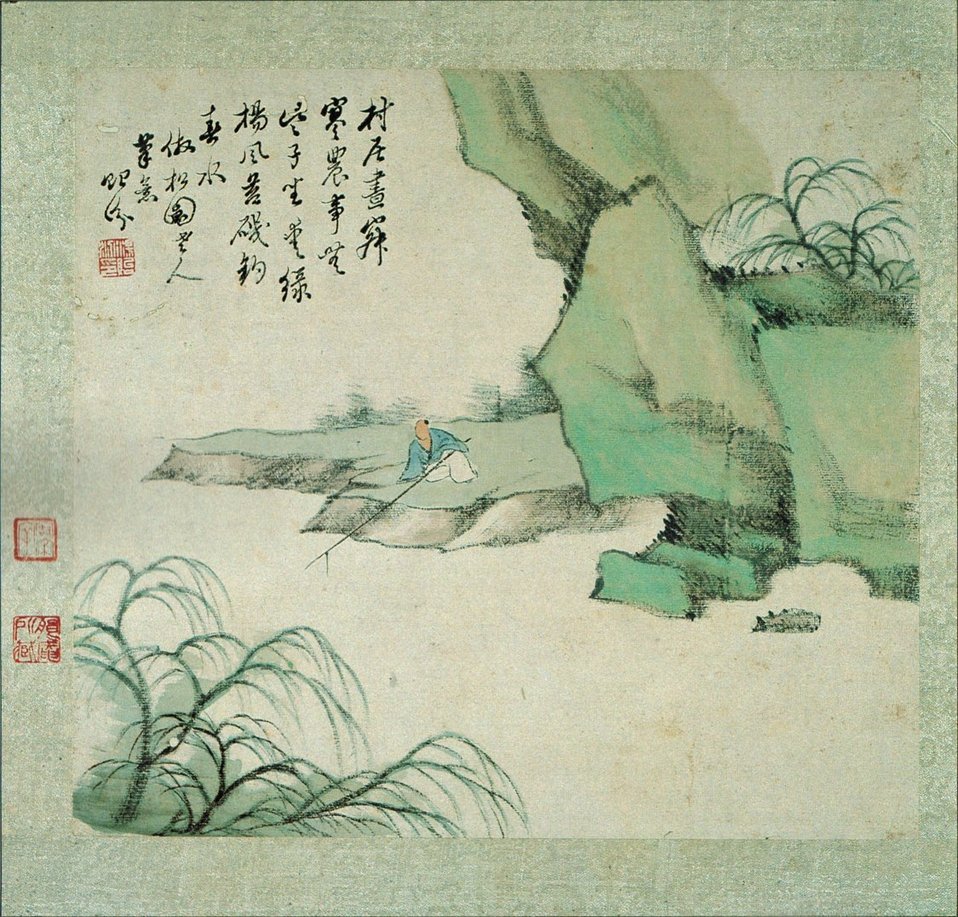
Hermitage in the Mountains, painting by T'ang I-fen (Tang Yifen), 1846, Honolulu Academy of Arts